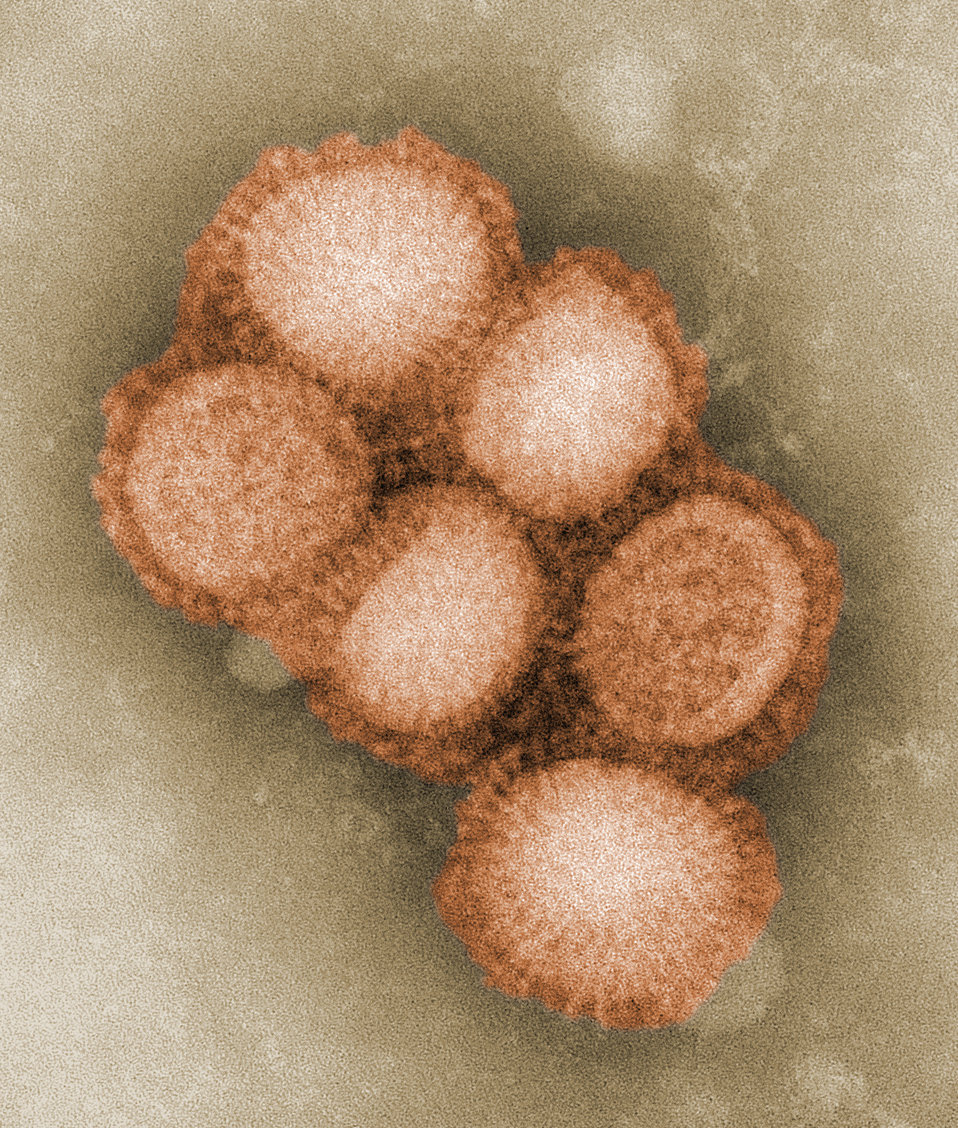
This colorized negative stained transmission electron micrograph (TEM) depicted some of the ultrastructural morphology of the A/CA/4/09 swine flu virus. See PHIL 11212 for a black and white version of this image.What is Swine Influenza?